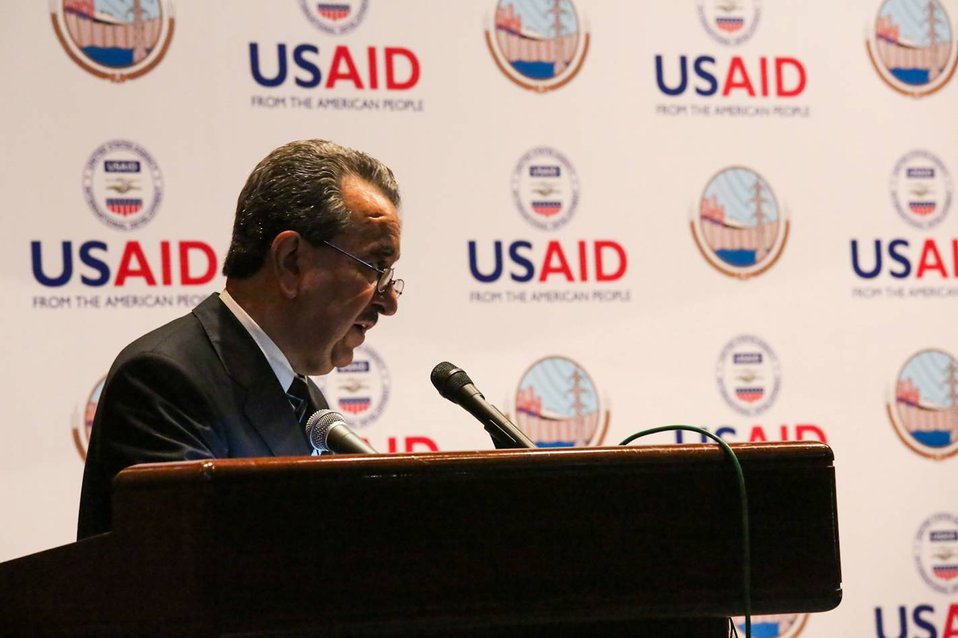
Islamabad, September 12, 2012 - Project Launch Ceremony of Waran Canal Irrigation System